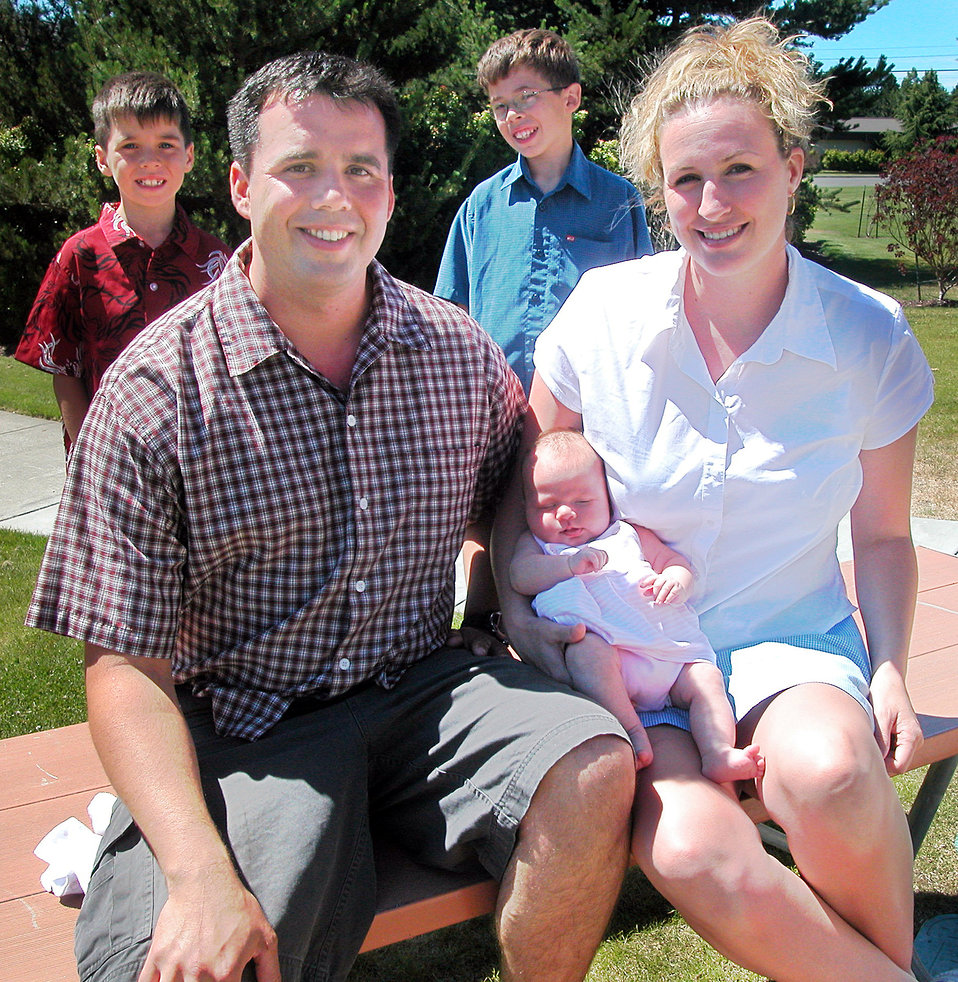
Proud parents

MCCHORD AIR FORCE BASE, Wash. -- The Murphy family (left to right) includes Tyler, Chris, Christopher Jr., Katie and Becky.